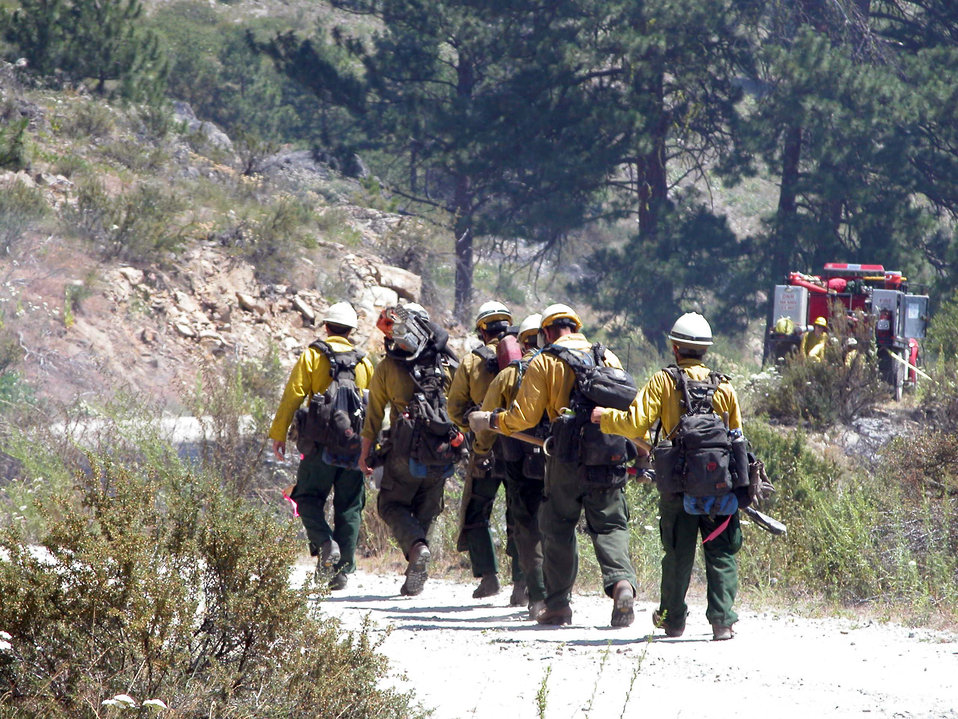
The Dalton Hotshot crew walks to their work assignment at the 25 Mile Fire. The 25 Mile Fire near Manson, WA began on Jul. 04, 2013 is under investigation and has consumed approximately 2,098 acres and is approximately 70% contained. U.S. Forest Service photo by Washington Interagency Incident Management Team #4 member Jen Croft.